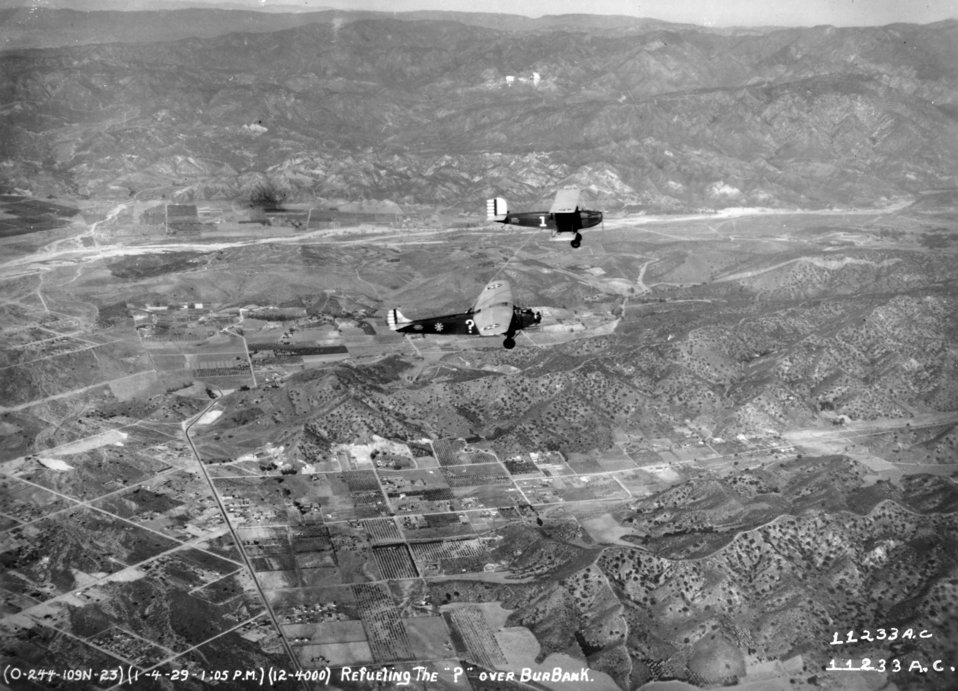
Refueling the Question Mark

EARLY YEARS -- Refueling the